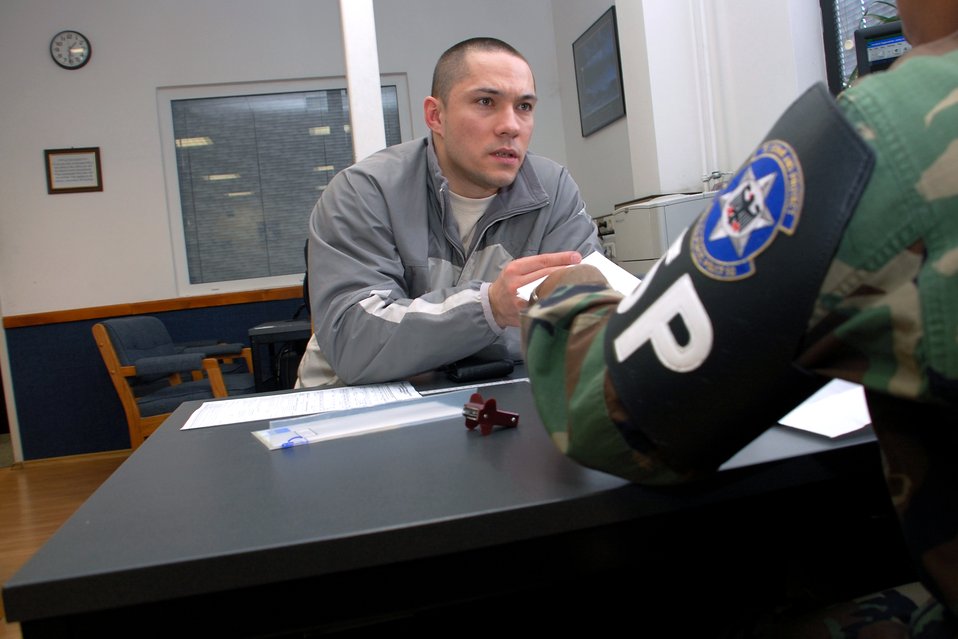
Vehicle registration streamlines customer service

Grzegorz Wieczorek speaks with a vehicle registration specialist Feb. 1 at Kaupaun Air Station, Germany. The registration facility changed its way of doing business to better suit customers' needs. The vehicle registration team serves approximately 50,000 people, including members of allied forces like Mr. Wieczorek, who is part of the Polish support unit on Ramstein Air Base, Germany.